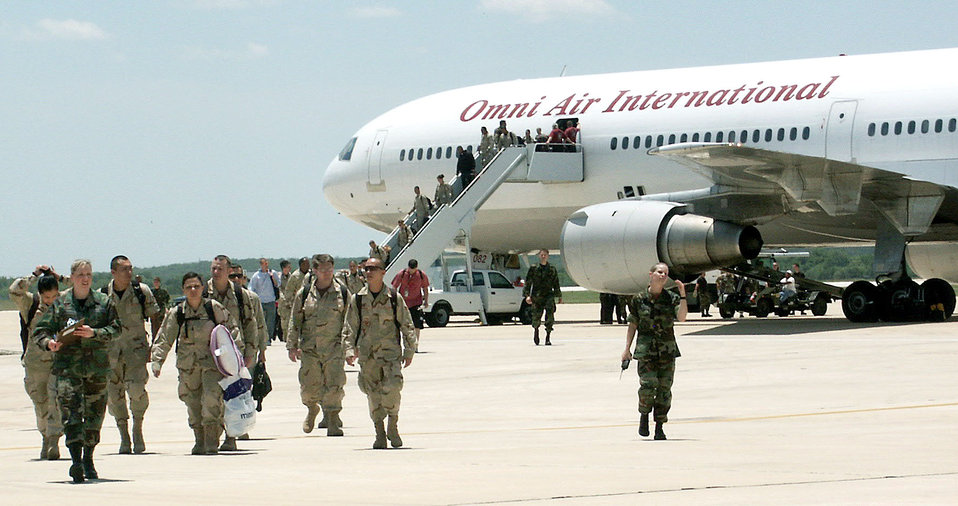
Back home

Members of the 59th Medical Wing arrive at Kelly Field in San Antonio after returning from a four-month deployment to Iraq on Tuesday, May 16, 2006. About 170 members of the Lackland wing deployed in January to work at the Air Force theater hospital at Balad Air Base.